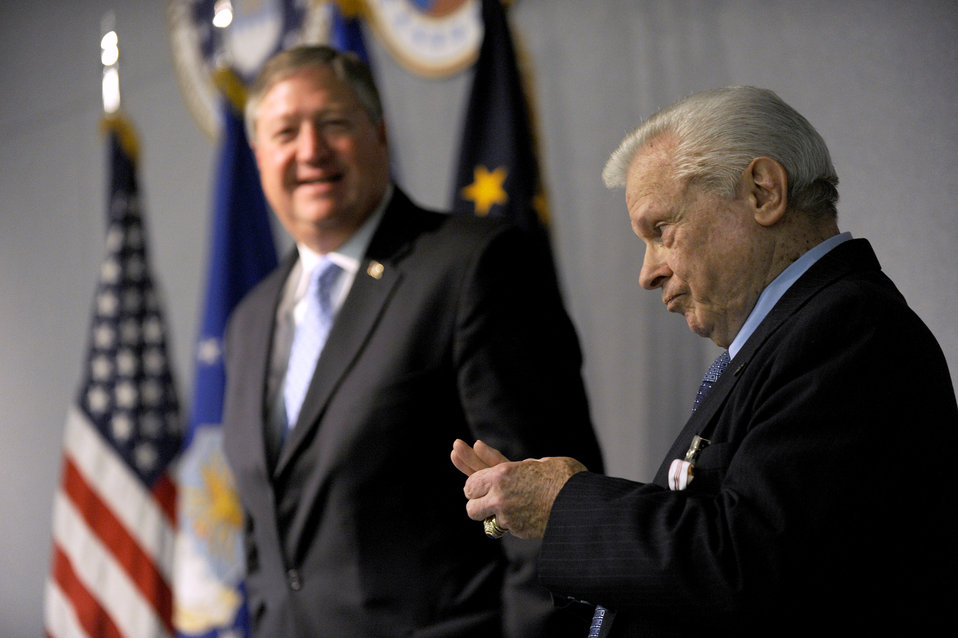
AF Review Boards Agency director retires

Secretary of the Air Force Michael Donley praises the career accomplishments of Joe Lineberger, the Air Force Review Boards Agency director, during his retirement ceremony Jan. 31, 2012, at Joint Base Andrews, Md.